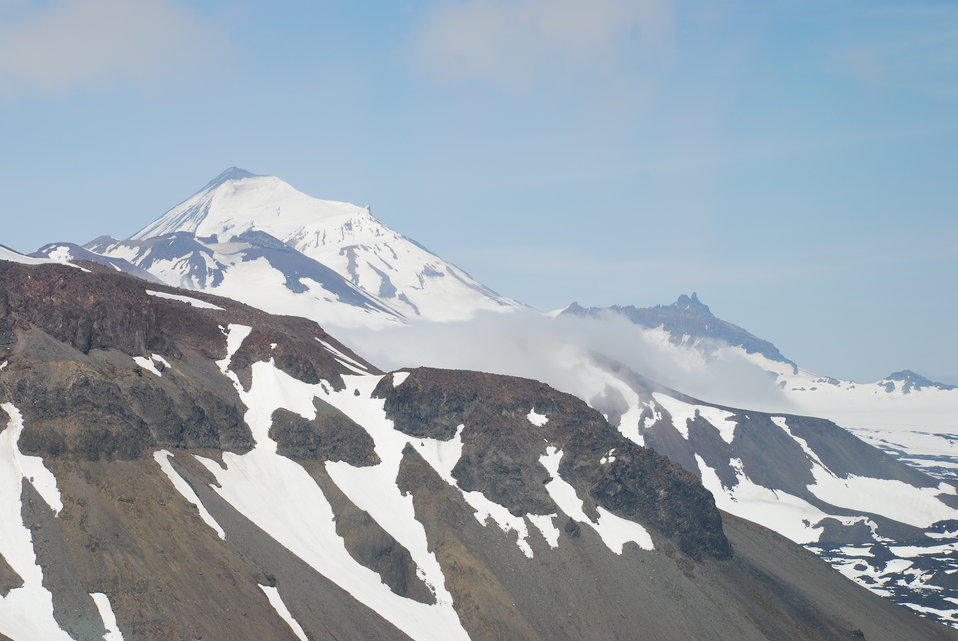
Pavlof Volcano

Volcanoes of the southern Alaska Peninsula